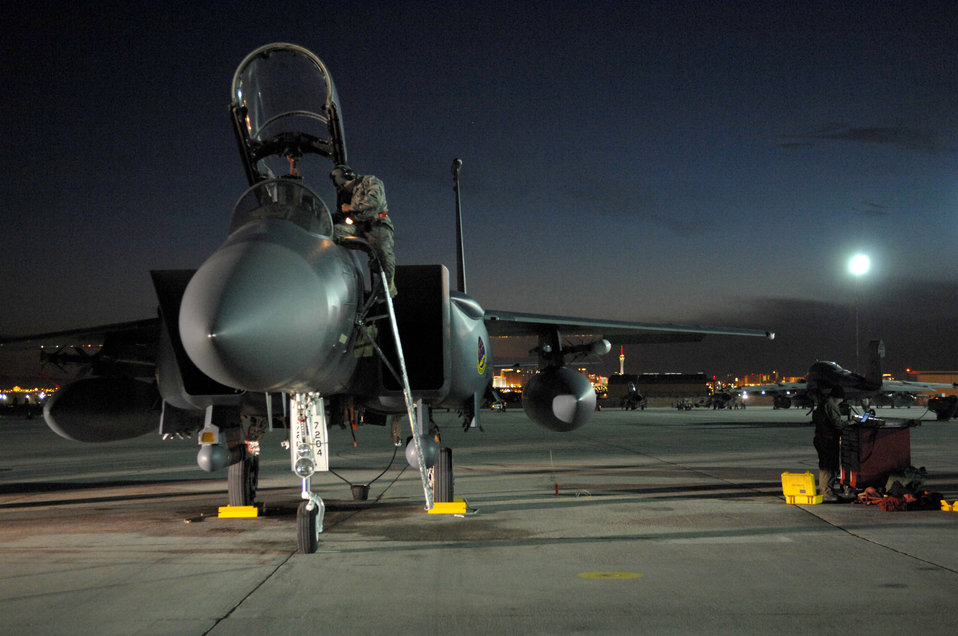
Night inspection

Airman 1st Class Anthony Prewitt performs a post flight inspection on an F-15E Strike Eagle after a mission during Red Flag 08-2.1 Jan. 23 at Nellis Air Force Base, Nev. Red Flag is a two-week long multinational exercise providing a realistic environment to practice combat scenarios.